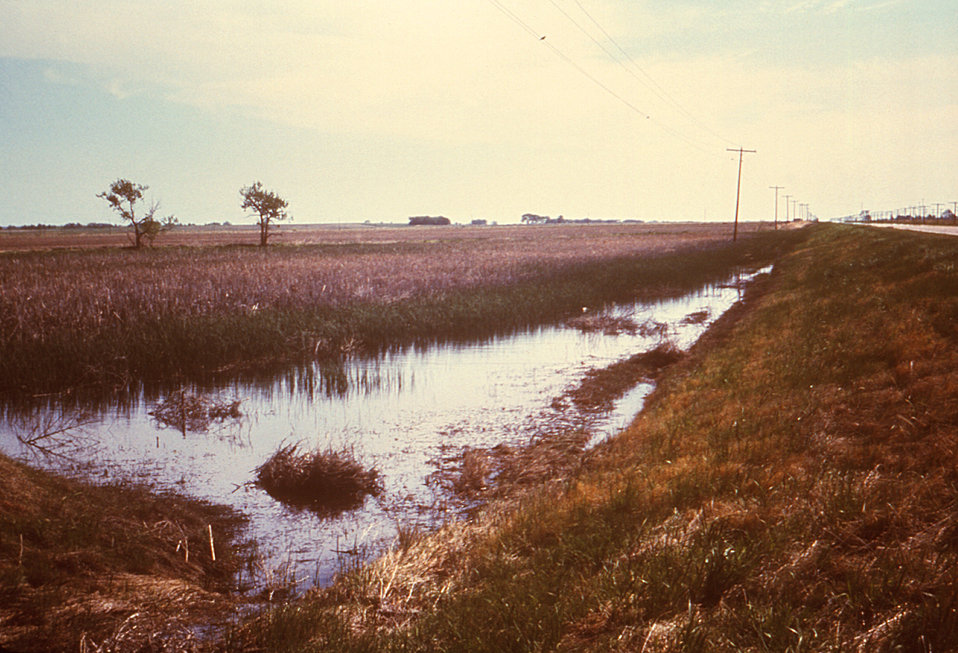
This 1974 photograph depicted a 'borrow pit' along side a Nebraska roadway that was a known habitat, and breeding site for Culex sp., and Culiseta sp. mosquitoes.